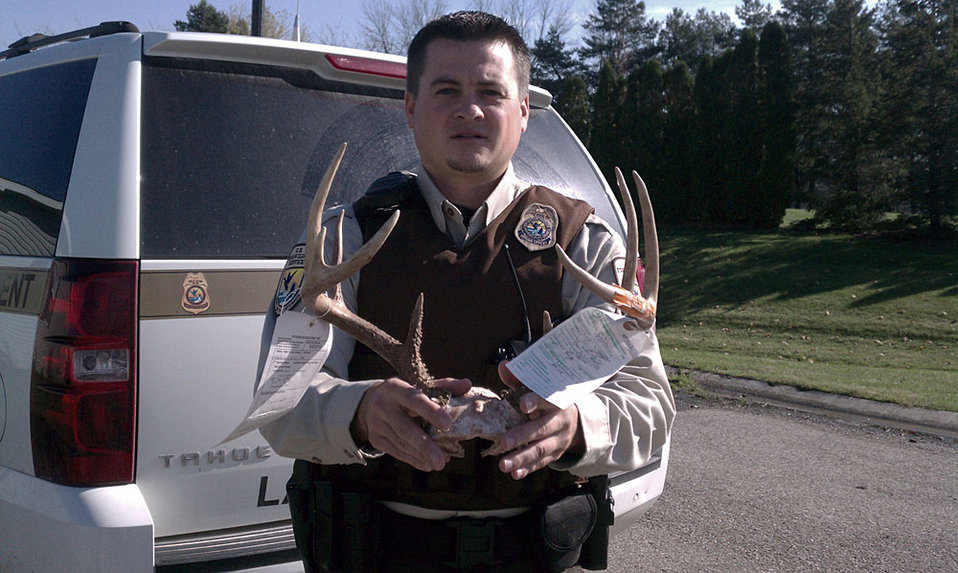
Ryan Pauly served in the U.S. Marine Corps from 2002 to 2006 as part of the 3rd Amphibious Assault Battalion. Pauly was honorably discharged as a Sergeant in 2006 before pursuing a bachelor's degree in Natural Resources Law Enforcement from Central Lakes College and the University of Minnesota, Crookston. Pauly is currently the Federal Wildlife Officer stationed at Shiawassee NWR in Saginaw, Michigan.